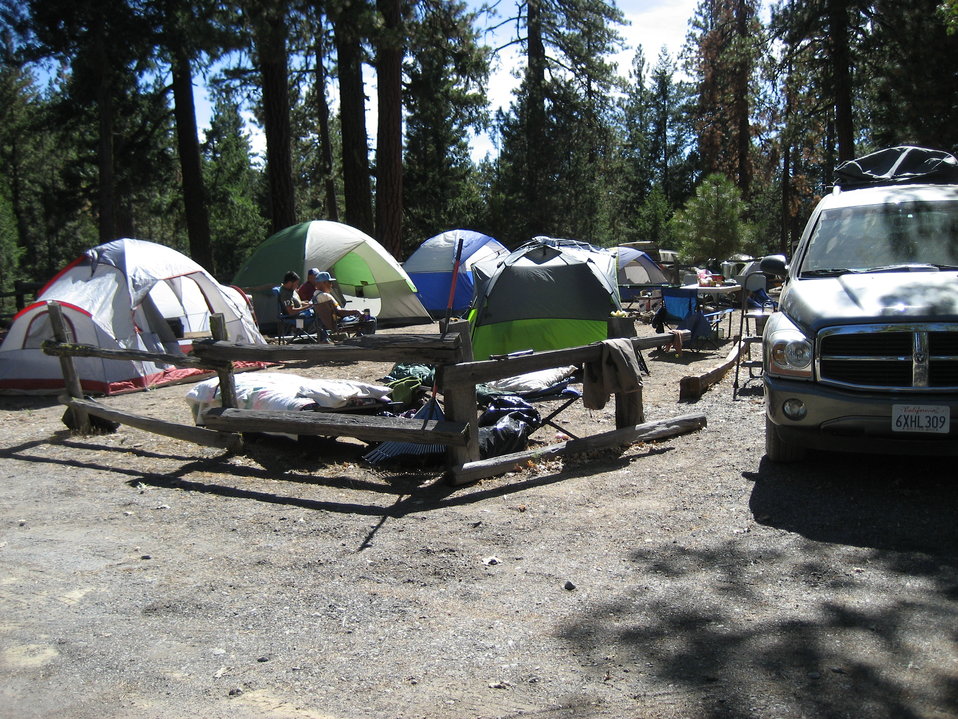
nomecult3

Three generations of Native Americans commemorate the 150th anniversary of the Nome Cult Walk. Not all of the participants hike—some provide moral support, make camp, or cook meals for those who trek the 100-mile route.